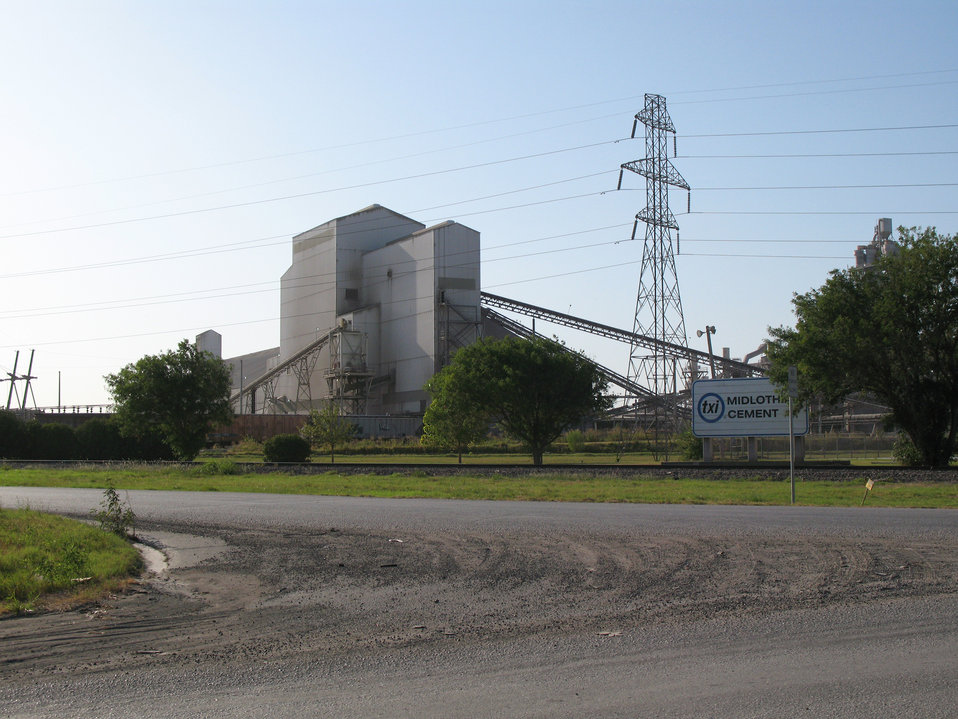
This 2009 image depicts a cement processing plant located in Midlothian, Texas. The manufacturing of cement demands close scrutiny, for at all phases of its production one encounters possible negative environmental impact including the release of airborne particulates, and exhaust gasses.